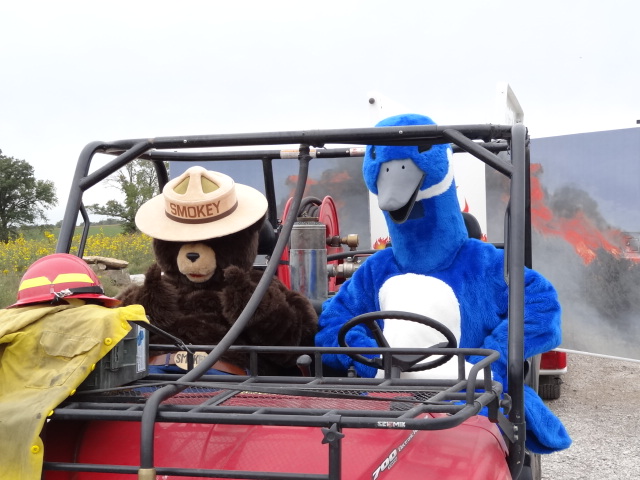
Smokey Bear and the Blue Goose

Marais des Cygnes National Wildlife Refuge uses prescribed fire as a land management tool. Often other federal agencies such as the National Forest Service, partner with US Fish and Wildlife to get the prescribed burns accomplished. Recently the National Forest Service's mascot, Smokey Bear, attended the Refuge's 'Let’s Play Outside' event. While at the event, Smokey joined forces with US Fish and Wildlife Service’s refuge system's mascot, to get the word about fire safety and uses.